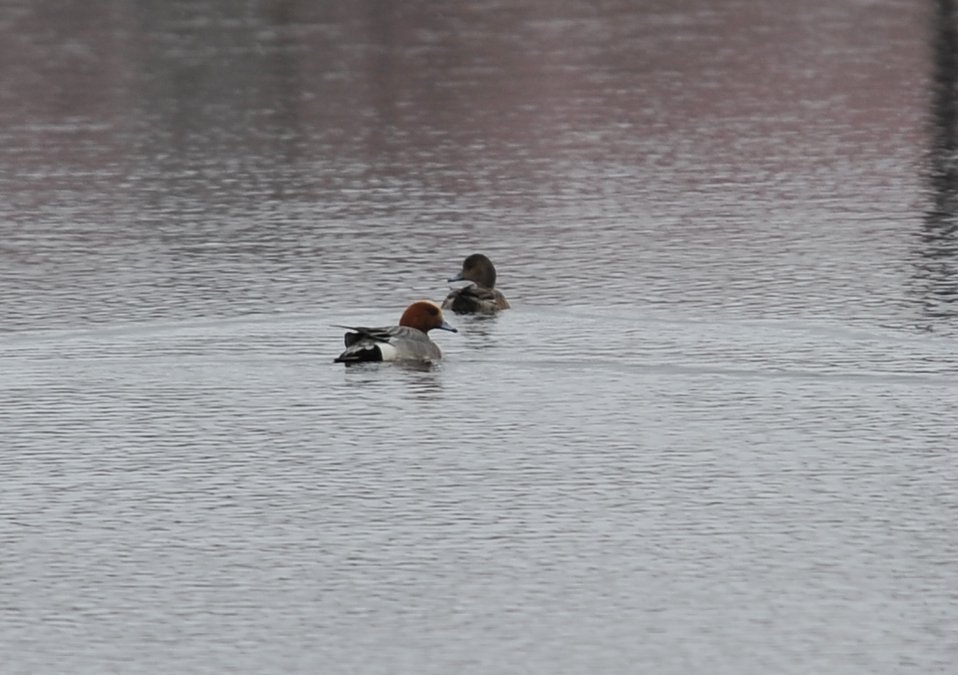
Eurasian Wigeon

USFWS Yukon Delta NWR